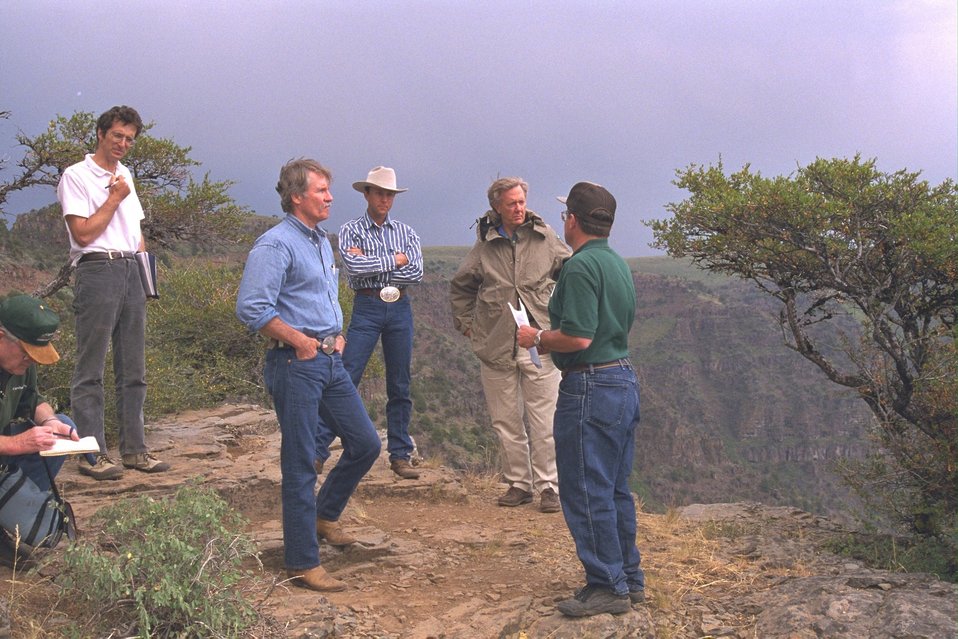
David Blackston in the foreground with (L - R) Hal Bernton, Governor Kitzhaber, rancher Stacie Davies, and Sec. Babbitt in the background at Big Indian Gorge.